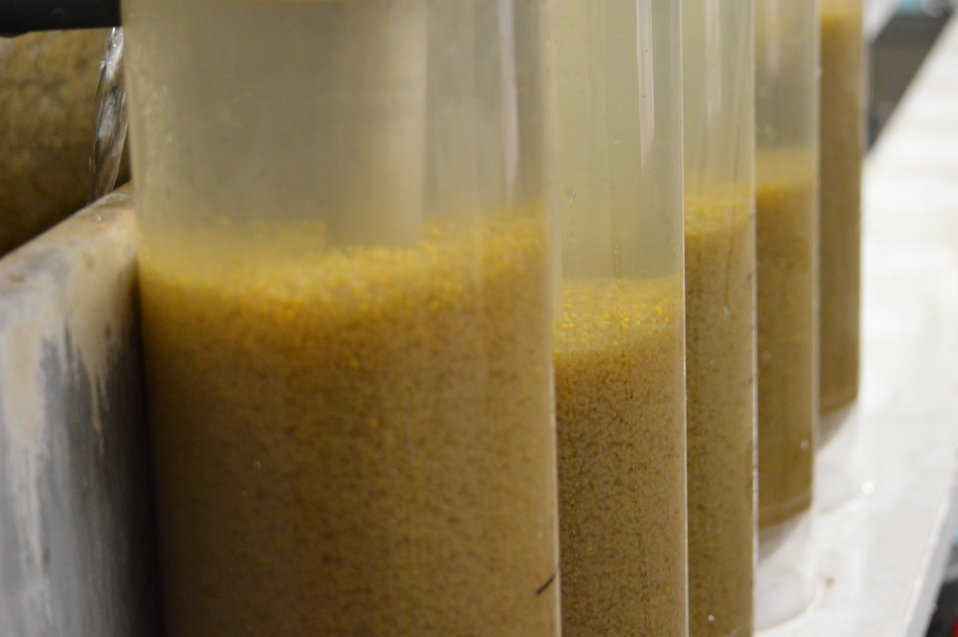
Eggs

Garrison Dam National Fish Hatchery in North Dakota.